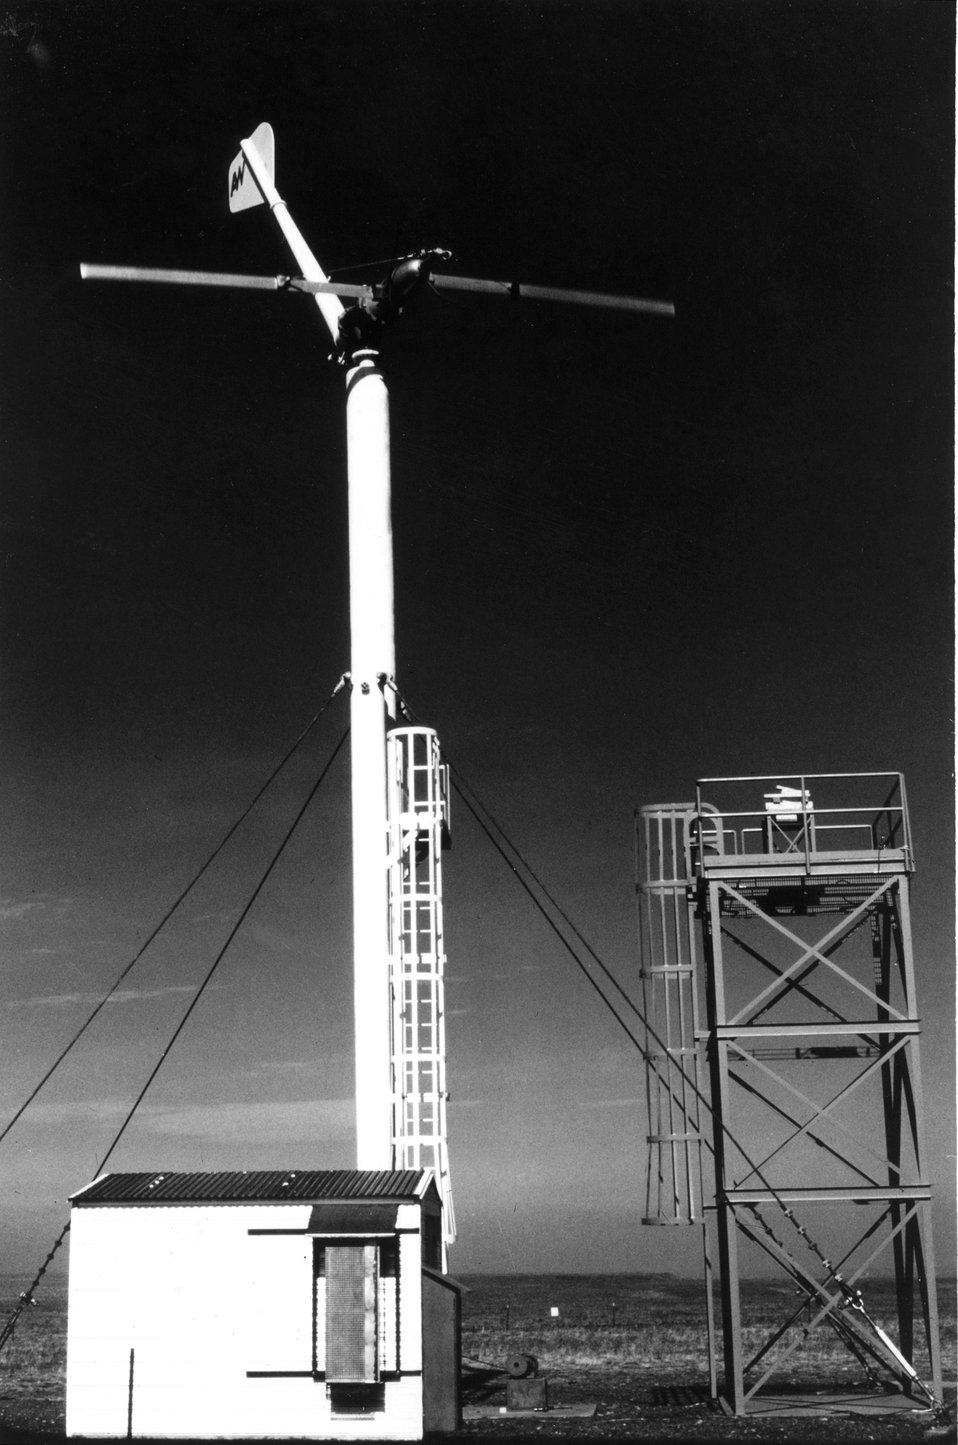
This two-bladed Aerowatt wind turbine generator was one of the first of a series of commercially produced wind machines to be installed and tested at the U.S. Department of Energy's Rocky Flats facility near Denver, Colorado. c. 1977